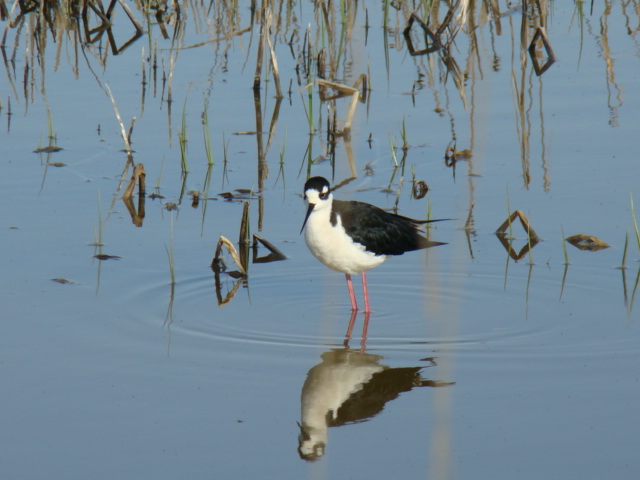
Black-necked Stilt

The lands of the refuge were established to protect and provide habitat for migratory birds that cross State lines and international borders and are by law a Federal trust responsibility.
The refuge is of great value to waterfowl and shorebirds, as well as other migrating water-dependent bird species, because of the diversity of wetland and upland habitats that provide for the diverse life cycle needs of these species.